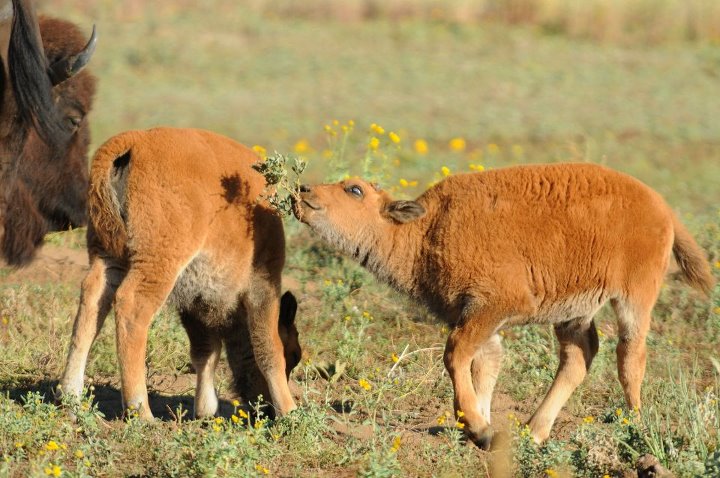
Bison Calves

Rocky Mountain Arsenal National Wildlife Refuge, Colorado
March 2012
USFWS

Springtime means calving season is around the corner and bison calves like these at Denver's Rocky Mountain Arsenal National Wildlife Refuge will soon learn about all the tasty and nutritious plants the prairie has to offer.